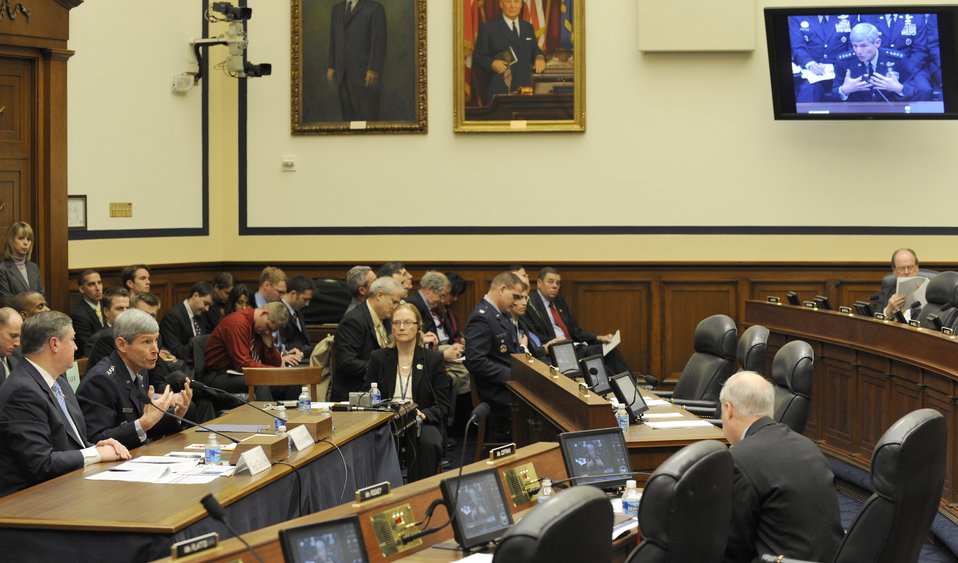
Chief of staff's testimony addresses 'Don't Ask, Don't Tell' repeal initiative

Air Force Chief of Staff Gen. Norton Schwartz serves as a witness Feb. 23, 2010, before the House Armed Services Committee in the Rayburn House Office Building on Capitol Hill. Both General Schwartz and Secretary of the Air Force Michael Donley answered questions that heavily leaned toward the status of the F-35 Lightning II joint strike fighter program, alignment with allies in future aircraft development, force readiness and the service's position on the review of the